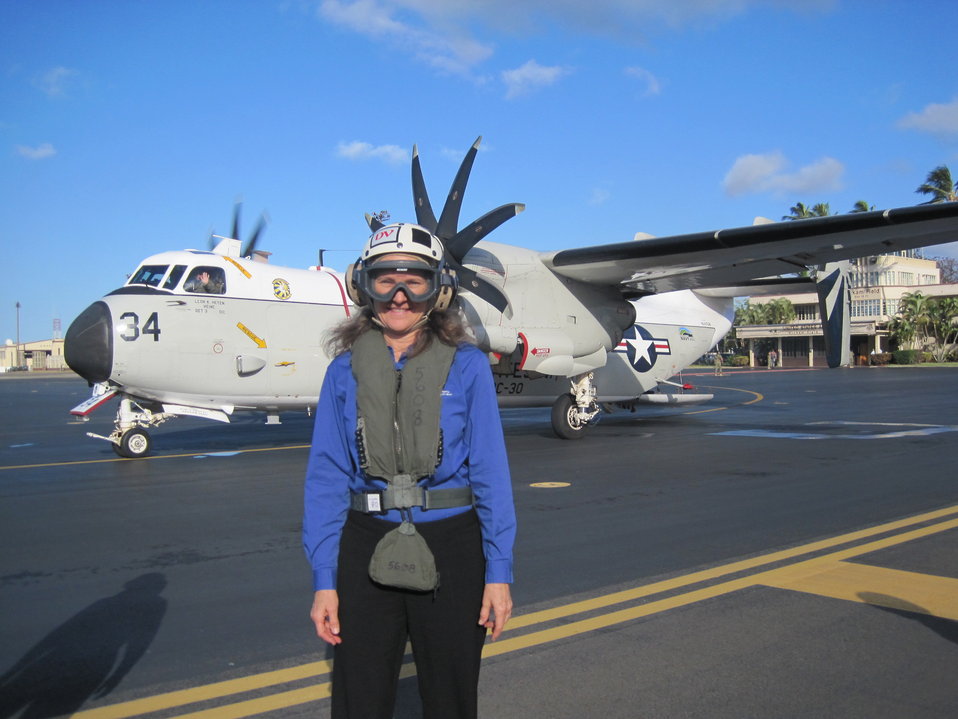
Hawaii SED prepares for Great Green Fleet Demonstration

U.S. Department of Agriculture (USDA) Farm Service Agency (FSA) Hawaii State Executive Director Diane Ley prepares to depart Hickam Air Force Base for the U.S. Navy’s Rim of the Pacific Exercises (RIMPAC) Great Green Fleet (GGF) demonstration in Honolulu, HI on July 18, 2012. A large number of the Navy ships and aircraft were powered by biofuels produced from American grown algae and waste animal fats. For nearly four years, Navy Secretary Mabus and Agriculture Secretary Vilsack have made a coordinated and concerted effort to support the development and stand-up of a domestic biofuels sector. The USDA has lent support to furthering research and business start-ups for biomass production and waste stream diversion, and the Navy has sought to test, demonstrate and accelerate investments in advanced biofuels for use in its many platforms.